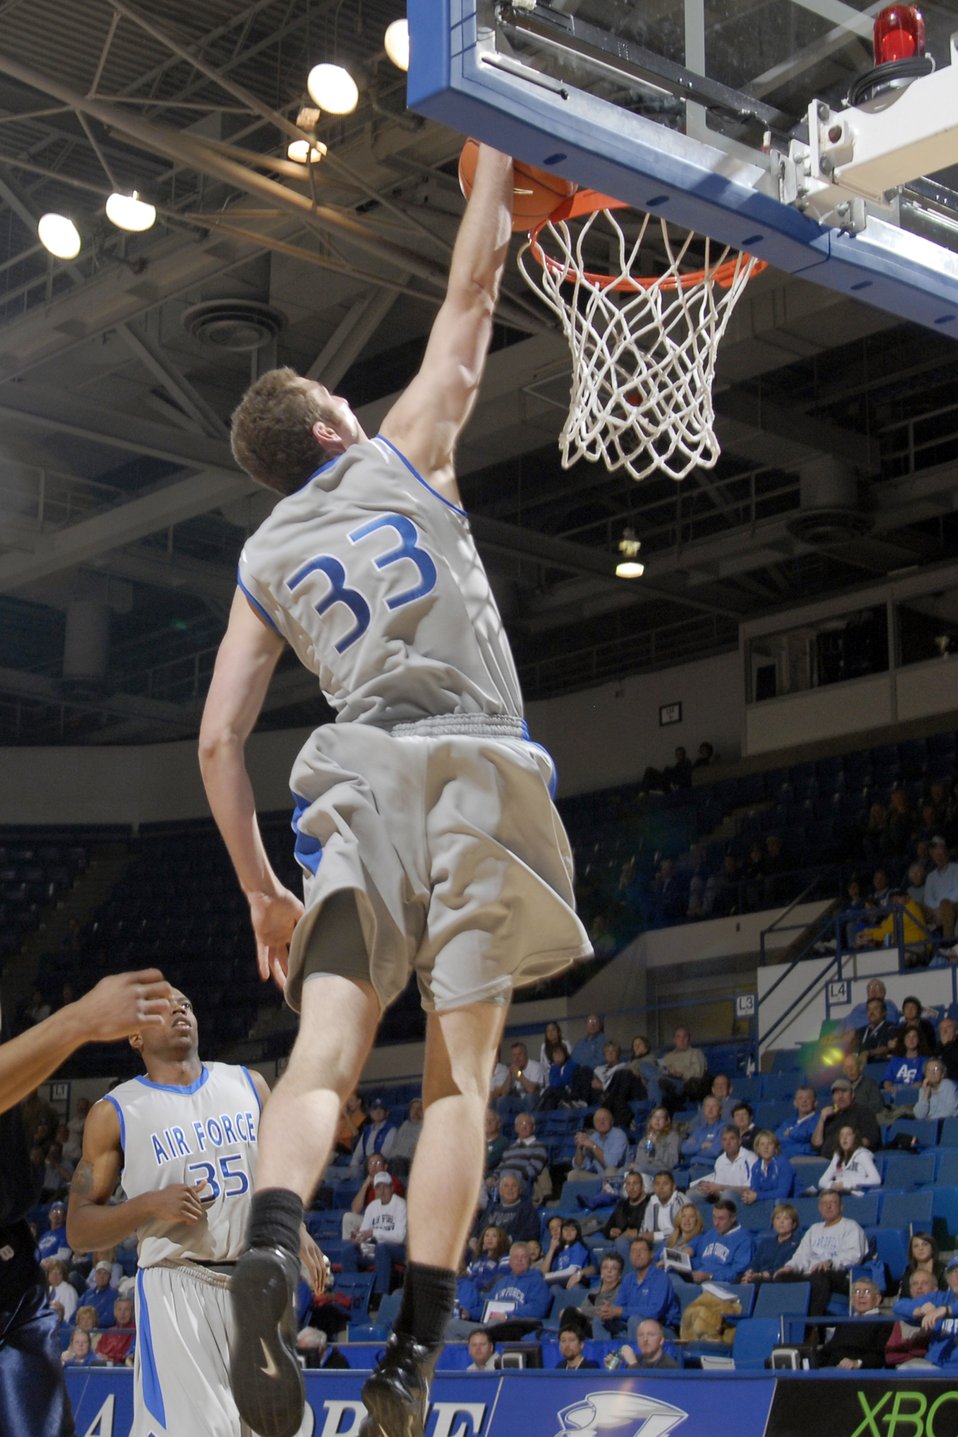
Falcons won 95-77

U.S. Air Force Academy, CO - Senior forward Mike McLain goes up for a basket against Dickinson State during the Reggie Minton Air Force Classic at Clune Arena Nov 20. The Falcons won 95-77, but finished the tournament in 2nd place after a 70-46 loss to Northern Colorado in the championship game.